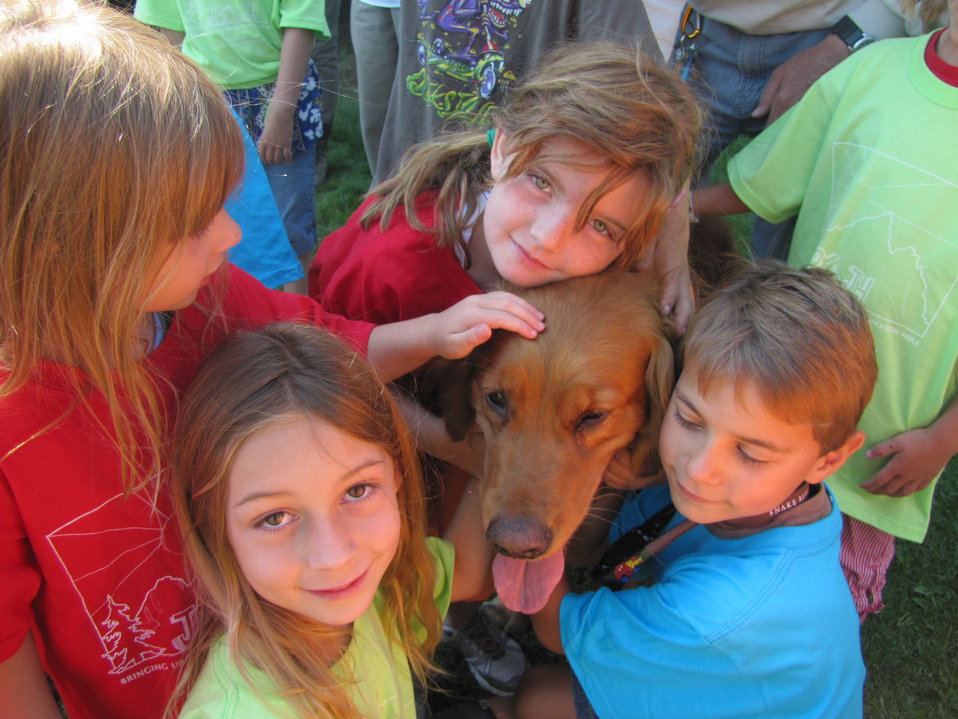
Reward for a Job Well Done

National Elk Refuge Facilities Maintenance Worker Amanda Soliday gives a search and rescue demonstration each summer at the visitor center with the help of her golden retrievers.

Soliday is a volunteer with the Wyoming K-9 Search and Rescue program, a nonprofit organization committed to training competent search dog teams and assisting with local, state, and federal authorities in search and rescue situations. She currently has two dogs: Roscoe, age 8 (pictured here), and Otis, age 1. Her program is always very popular with children, who help with the demonstration and have a chance to meet the dogs at the end of the session.